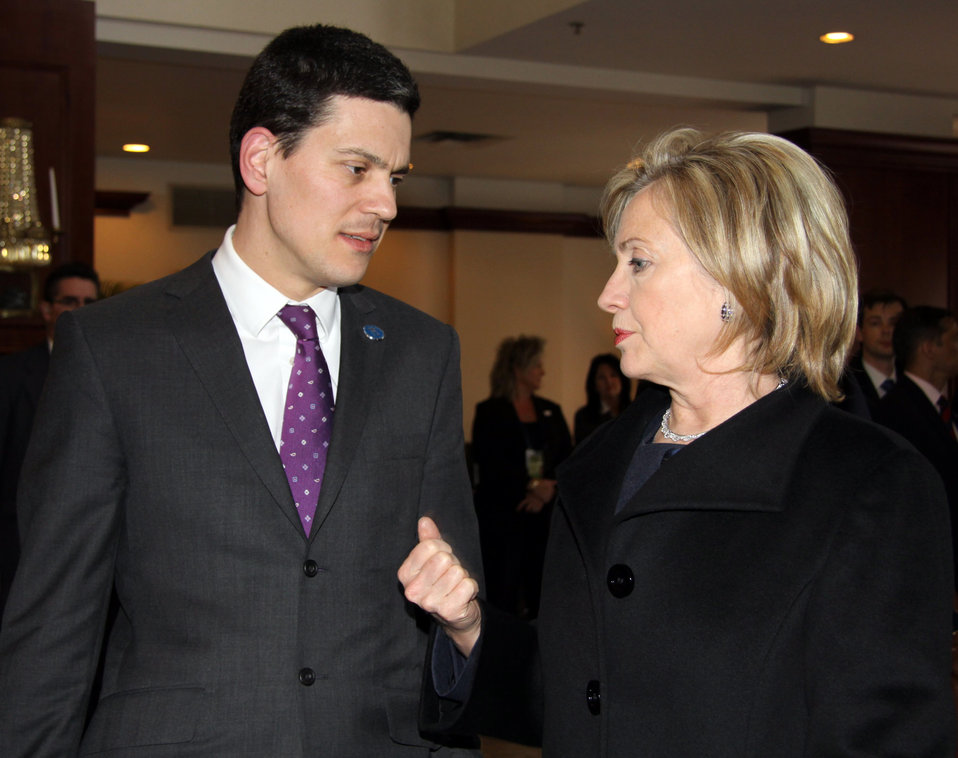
Secretary Clinton at G8 Foreign Ministers Meeting

U.S. Secretary of State Hillary Rodham Clinton speaks with U.K. Minister of Foreign Affairs David Miliband during the G8 Foreign Ministers Meeting in Ottawa, Canada March 29, 2010.